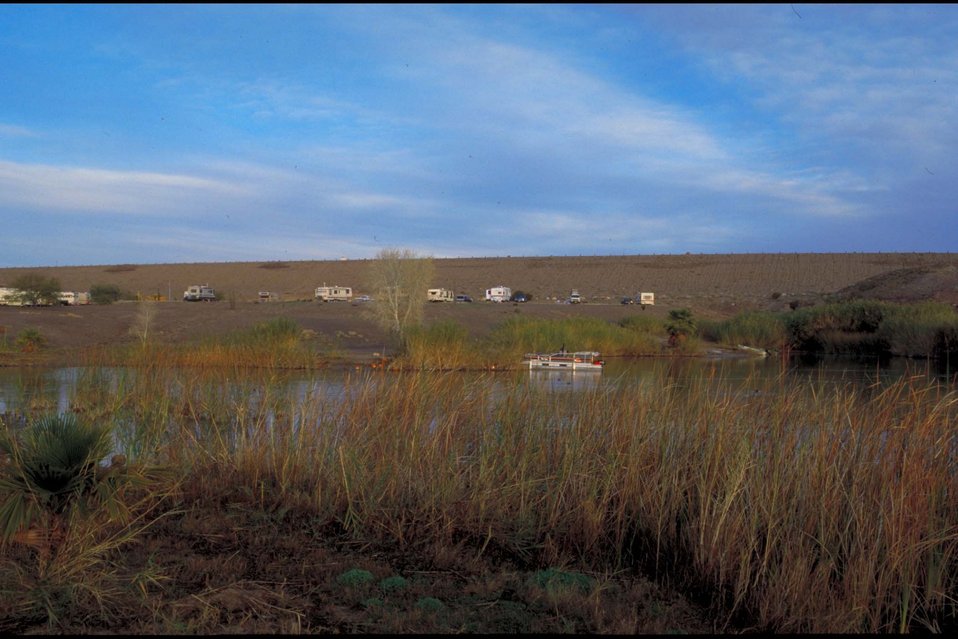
Squaw Lake Recreation Area